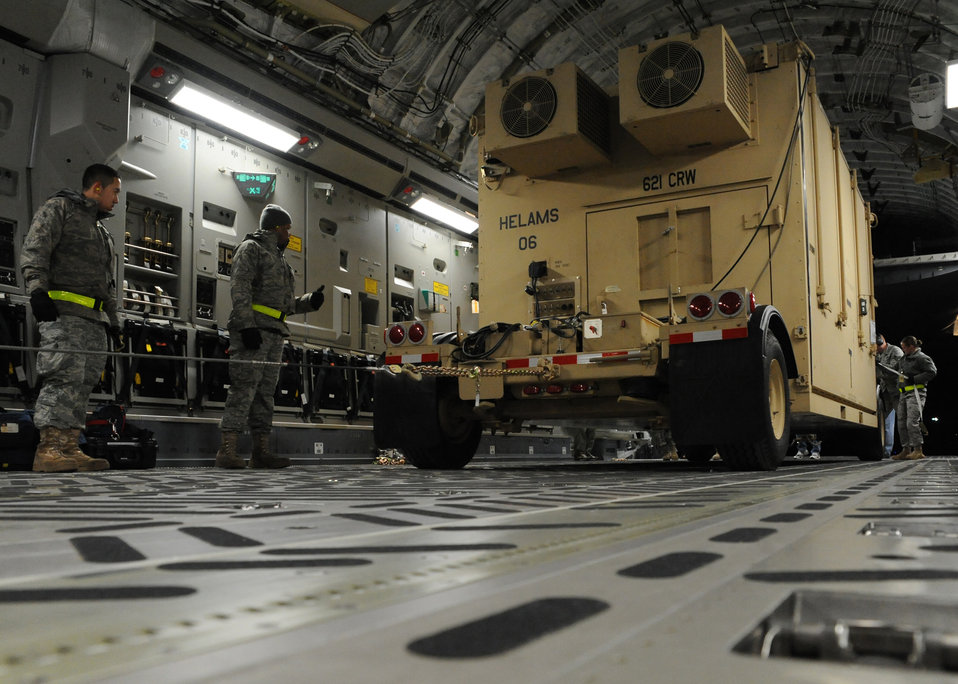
Haiti Humanitarian Effort

Equipment is loaded onto C-17 at Joint Base McGuire-Dix-Lakehurst, New Jersey, Jan. 15, 2010. The Charleston C-17 was used to transport equipment needed to aid the humanitarian effort in Haiti.